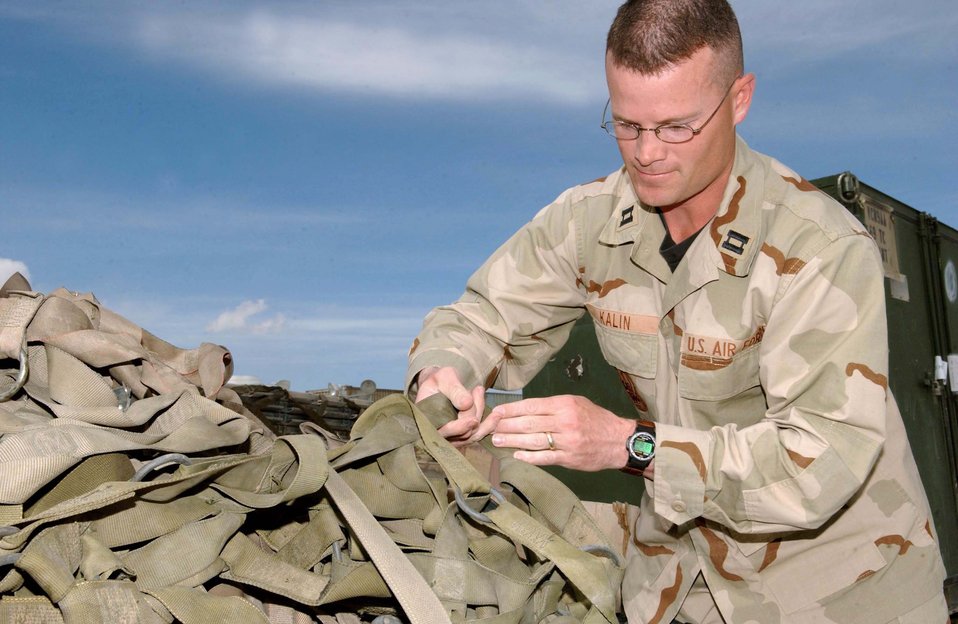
Bagram Airmen recover hundreds of pallets

BAGRAM AIR BASE, Afghanistan -- Capt. Jason Kalin takes inventory of the netting collected here by Airmen trying to recover pallets and netting for an Air Mobility Command shortage. Captain Kalin is the squadron's operations officer. Airmen of the 455th Expeditionary Logistics Readiness Squadron located 1,030 pallets and 3,550 top and side nets worth $1.7 million.